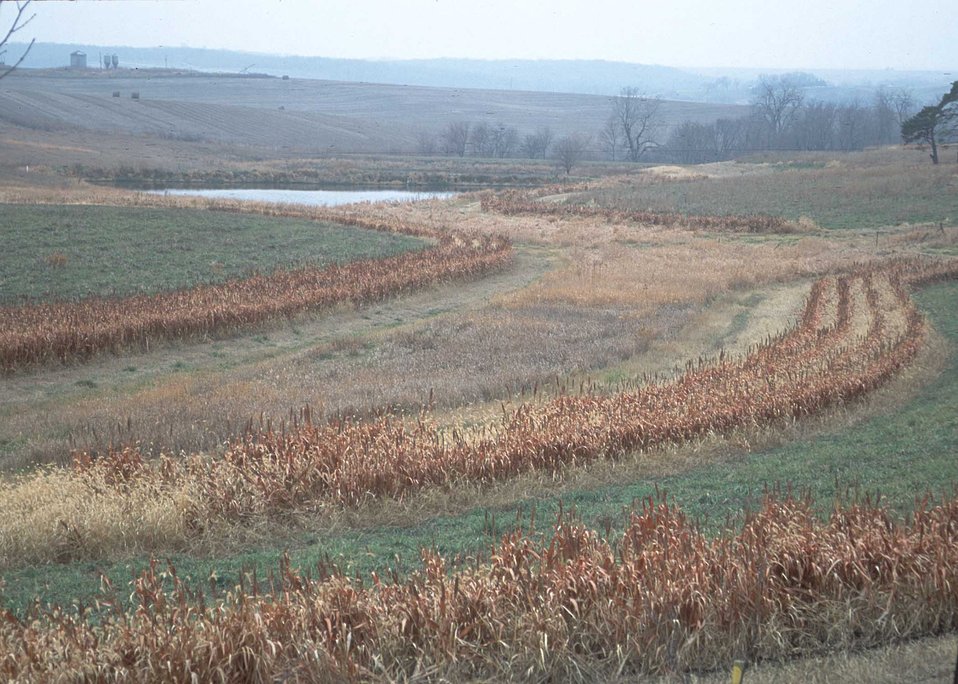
Food plots border a grassed waterway in Union County SWCD, Iowa.